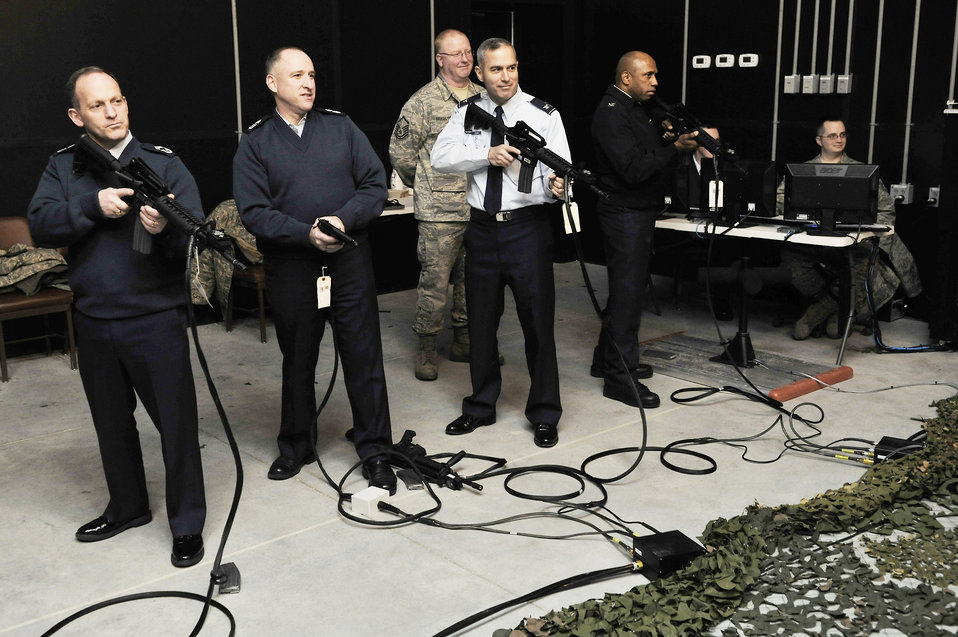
Simulator provides risk-free training at Eielson

Airmen test out the Engagement Skills Trainer 2000 Jan. 4, 2010, at Eielson Air Force Base, Alaska. The EST 2000 provides Airmen several scenarios in which they would be required to fire their weapon.